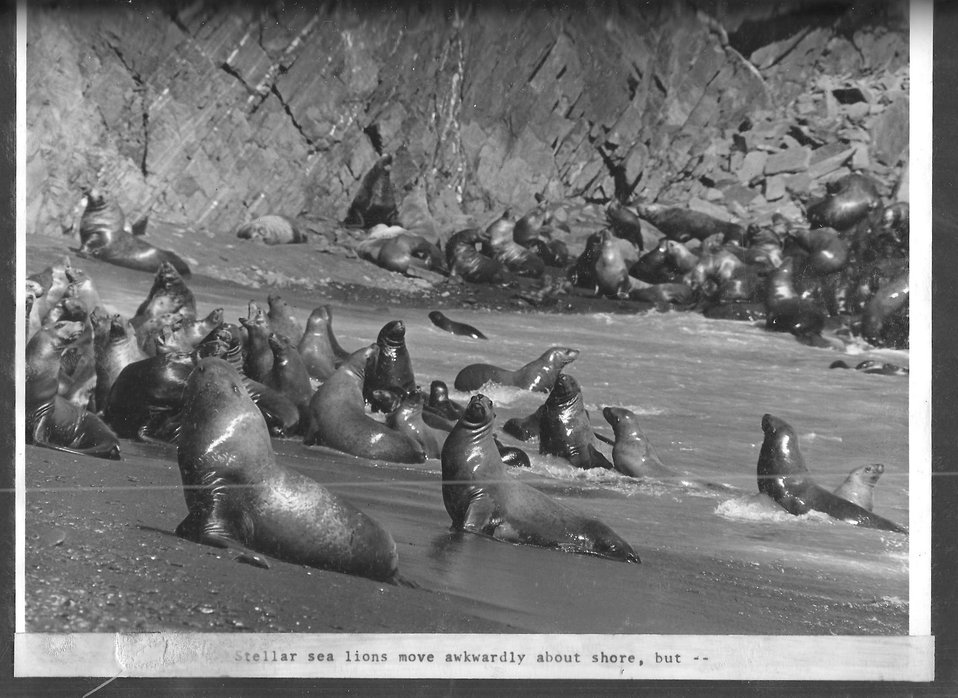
(1970) Graceful Sea Lions

Credit: USFWS

Source and Contact: Kodiak National Wildlife Refuge